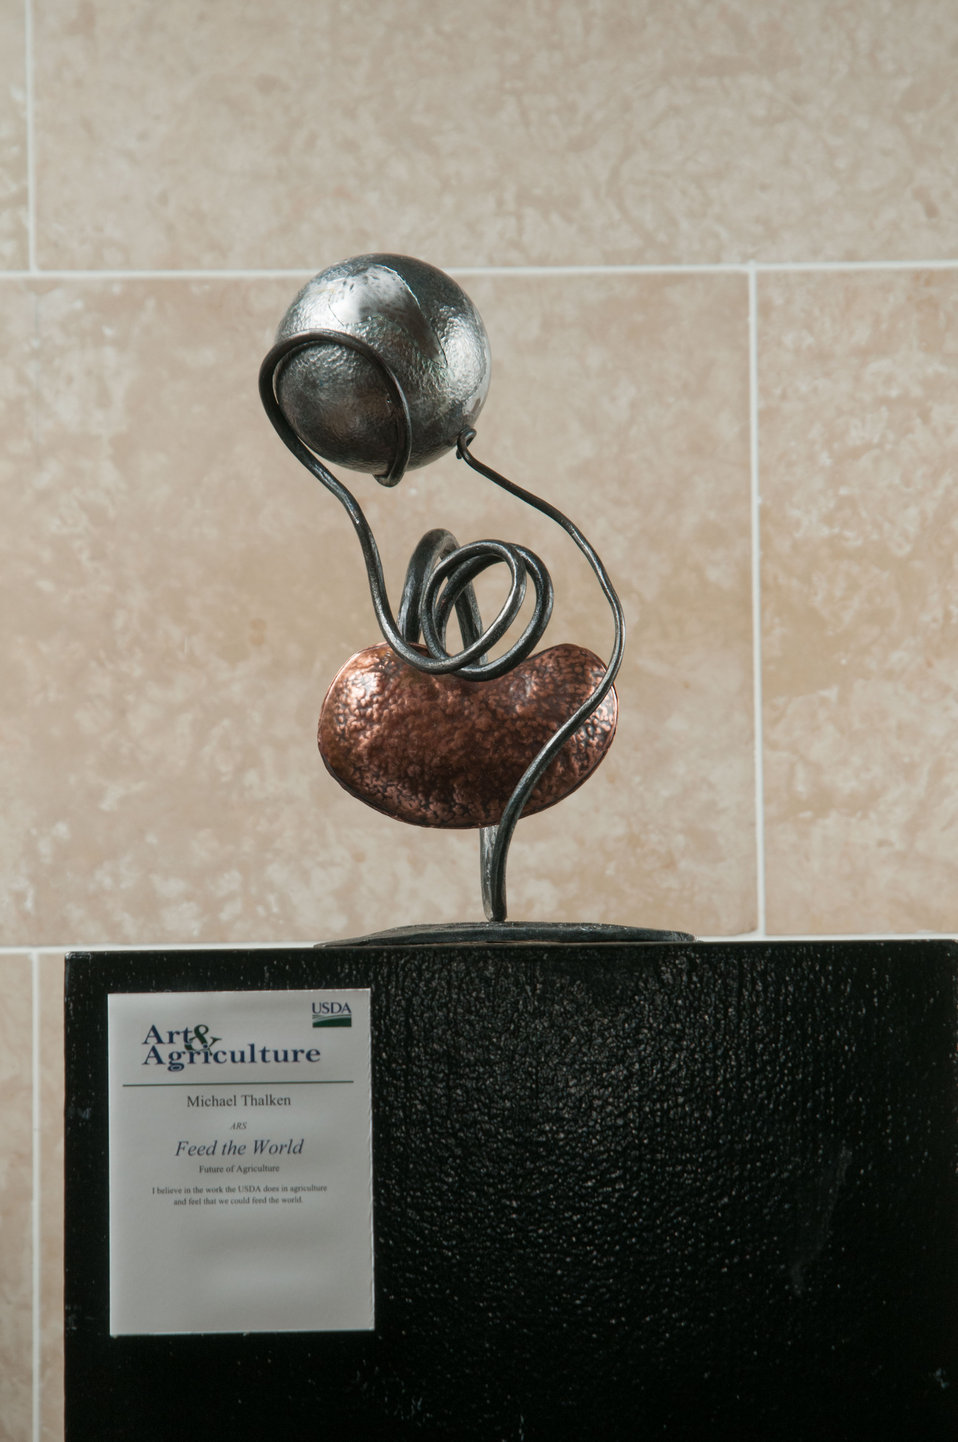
Online Viewer's Choice entries of the 2013 Art & Agriculture, Tuesday, July 9, 2013, in the South Building, Washington, D.C. Themes were expressed by employees from across the department and the contest was open to full-time and part-time USDA employees. Winning artwork will be displayed till the end of the year. U.S. Artistic expression is a creative outlet that is vital for an individual to grow and develop.